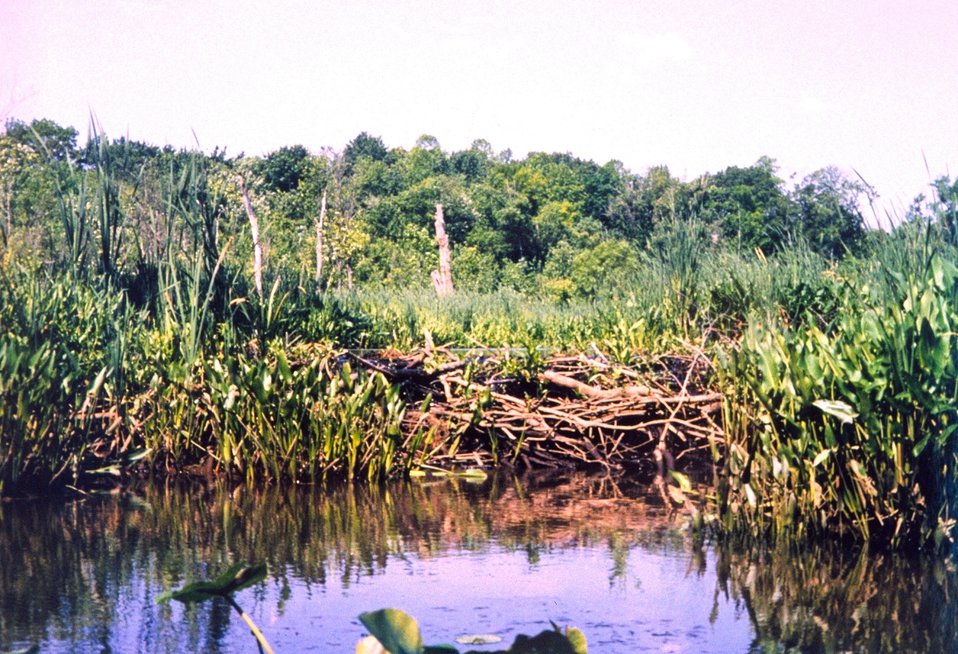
Beaver dam at Black Swamp Creek, a tributary of the Patuxent River.